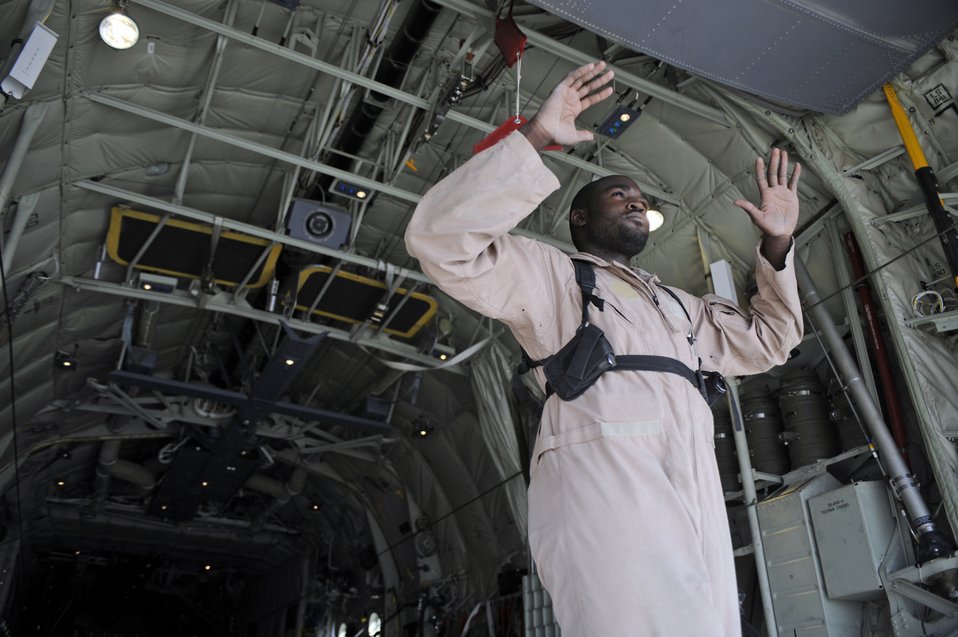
Airdrop fuels austere Afghan locations

Staff Sgt. Brian Commodore directs the movement of pallets into the cargo bay of a C-130J Super Hercules, in preparation for a night airdrop to deliver JP-8 fuel to troops on the ground July 17 over southwestern Afghanistan. Sergeant Commodore is a loadmaster assigned to the 772nd Expeditionary Airlift Squadron. Sergeant Commodore is deployed from the 41st Airlift Squadron, Little Rock Air Force Base, Ark.